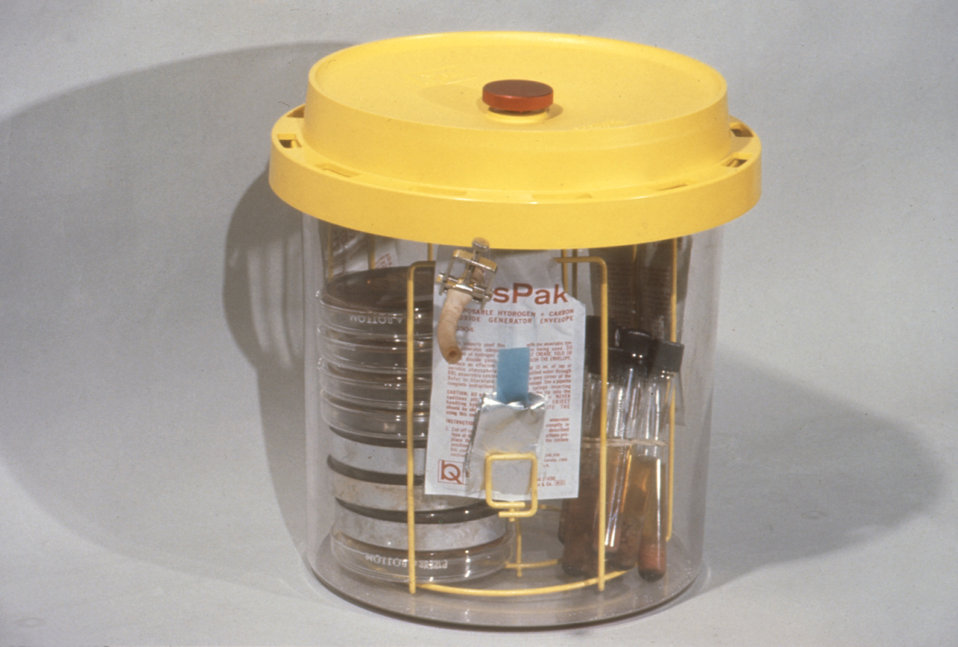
This 1975 photograph shows a large gas pak jar with its lid secured.